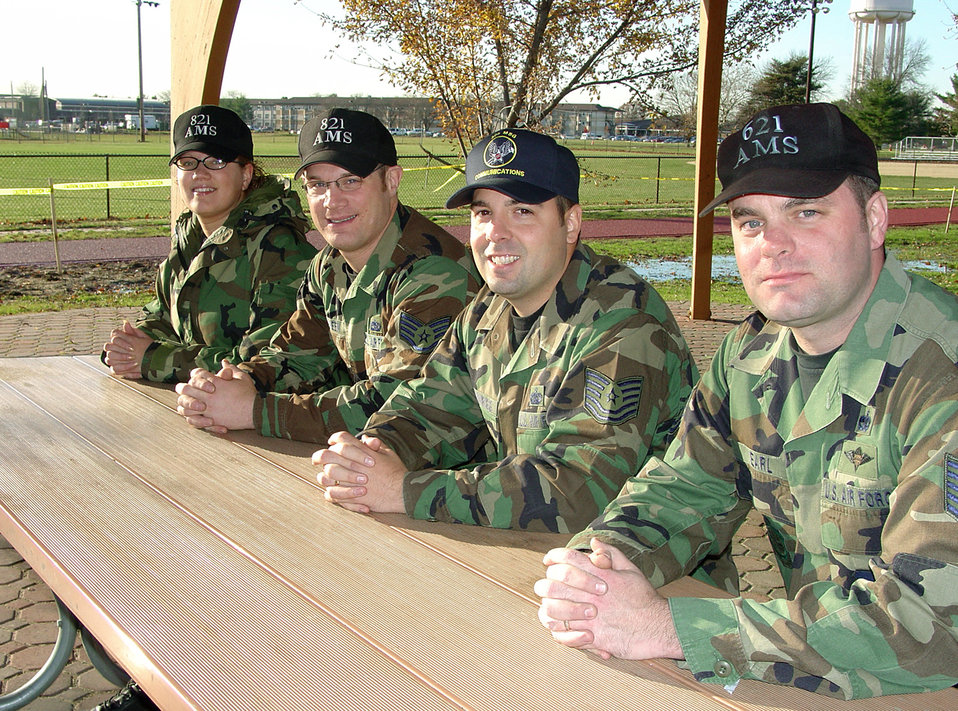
'No place like home' for McGuire Airmen

MCGUIRE AIR FORCE BASE, N.J. -- (From left) Senior Airman Sarah Gonzalez, Staff Sgt. Joseph Maneen, and Tech. Sgts. Scott Brownrigg and Shane Earl are all natives of Ilion, N.Y., stationed here. Airman Gonzalez and Sergeant Maneen are assigned to the 821st Air Mobility Squadron, Sergeant Earl is assigned to the 621st AMS, and Sergeant Brownrigg is assigned to the 305th Communications Squadron. Maj. Donald Brien (not pictured), of the 821st AMS, is also from Ilion.